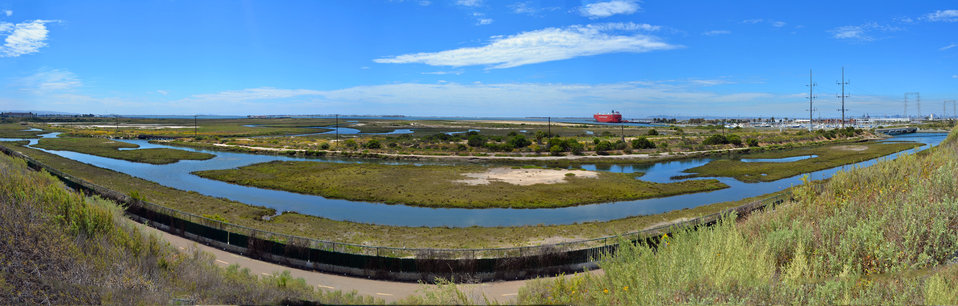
Sweetwater 'Connector Marsh' cradled by the Bayshore Bikeway